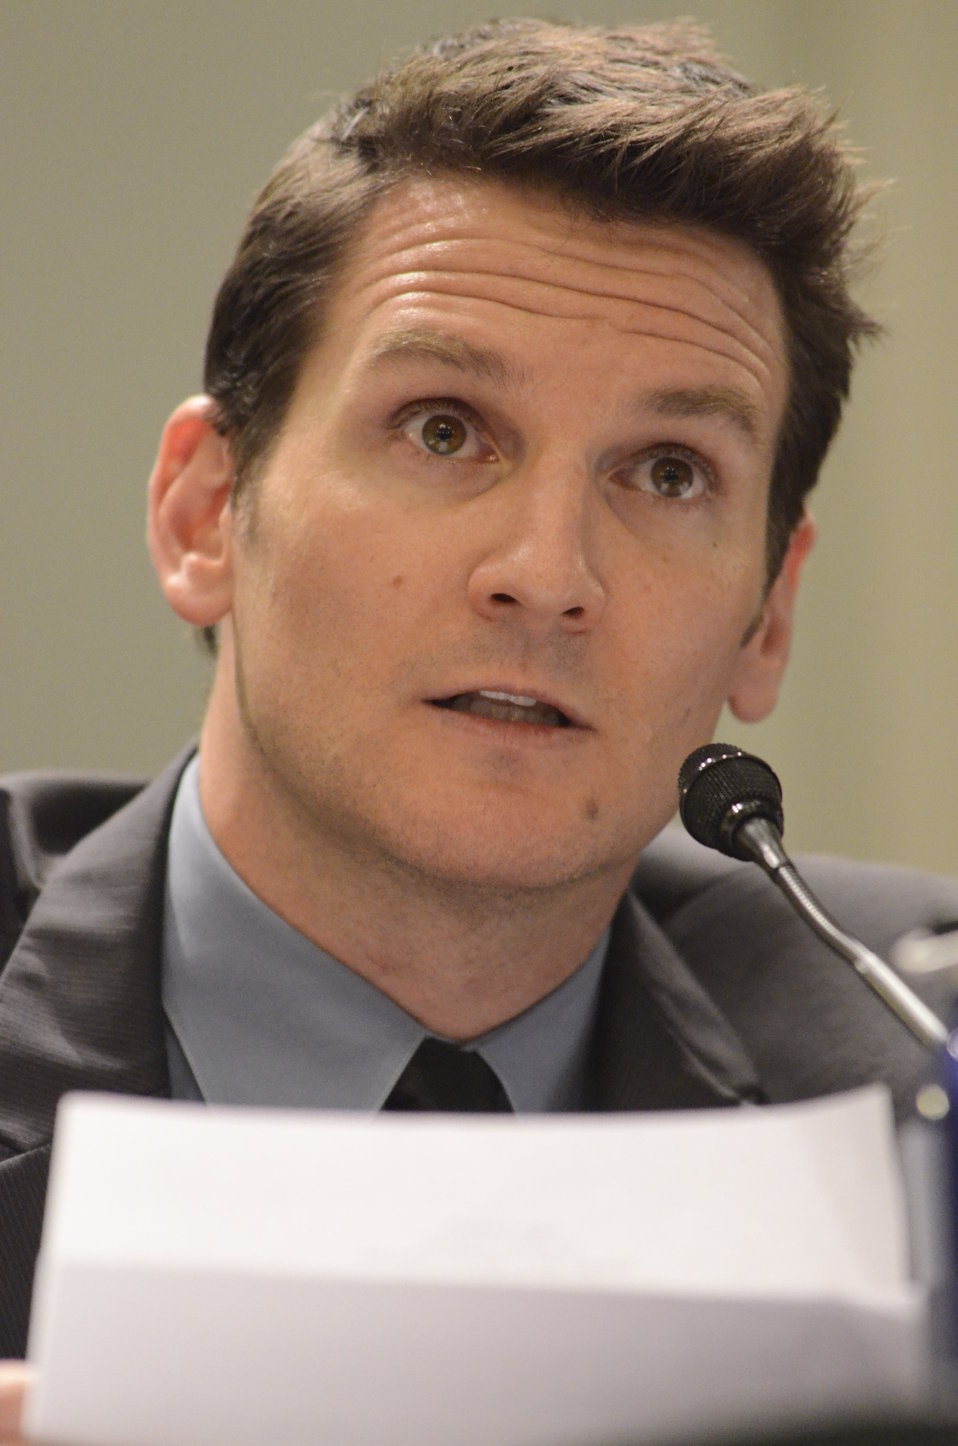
Director & Co-Founder, Reverb and Guster guitarist/singer Adam Gardner testifies on Retailers & Entertainers Lacey Implementation & Enforcement Fairness Act & Freedom from Over-Criminalization & Unjust Seizures Act at the Longworth House Office Building in Washington, D.C. on Tuesday, May 8, 2012.